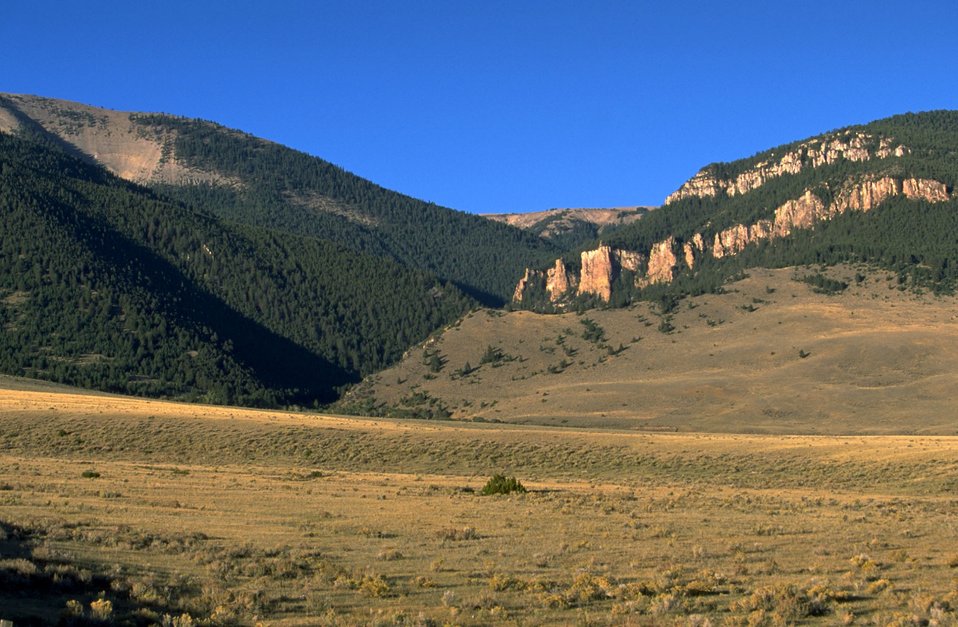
View of mountains across valley